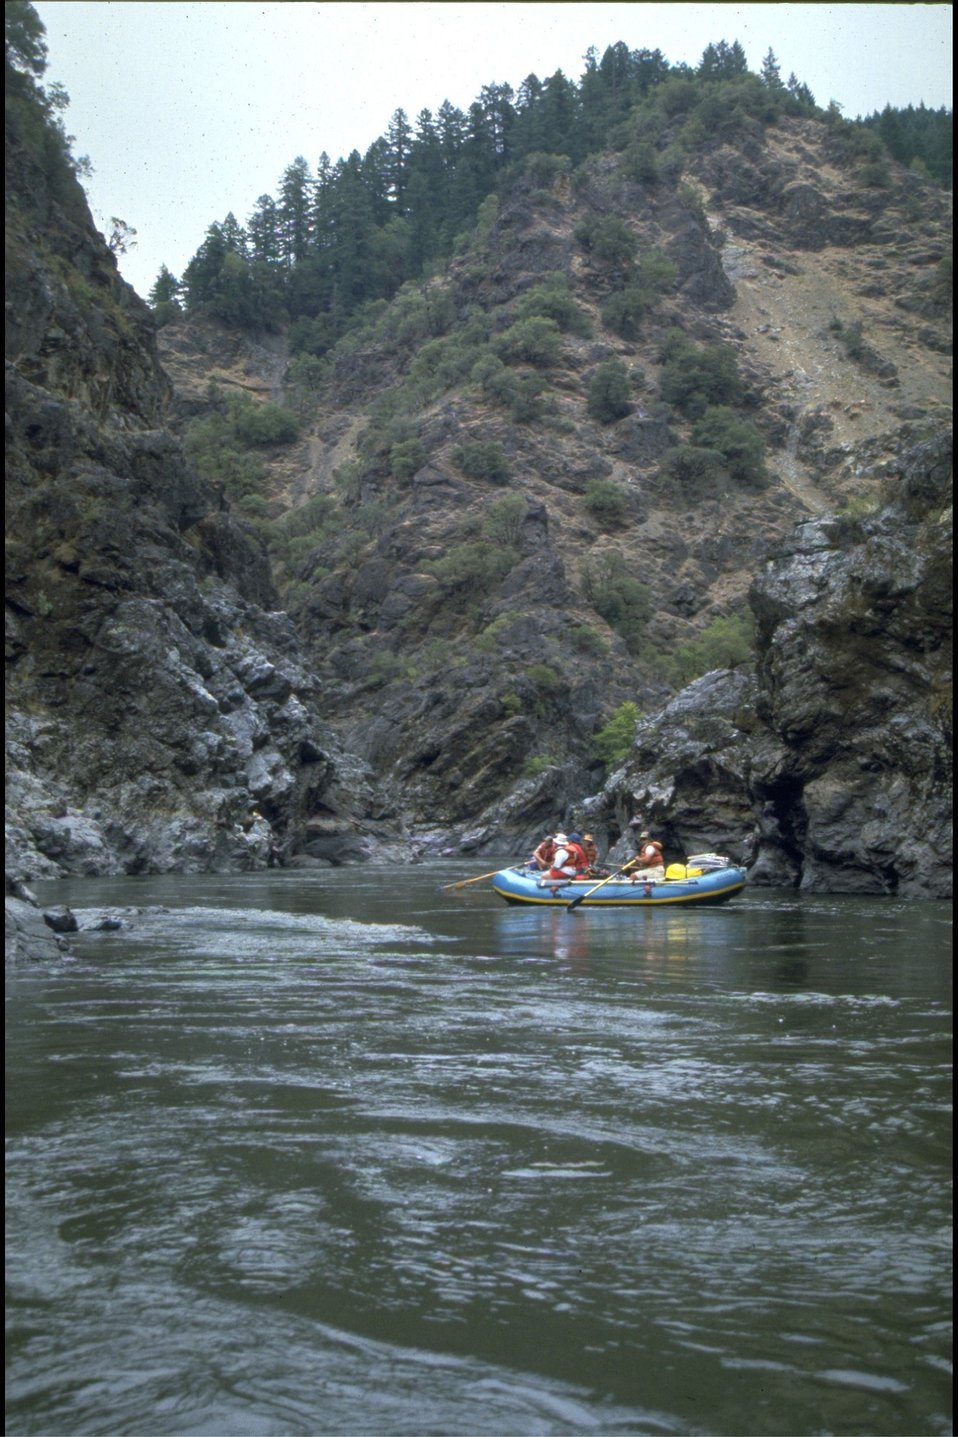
Rogue River - Wild section. Raft/Scenery. BLM Orientation trip.